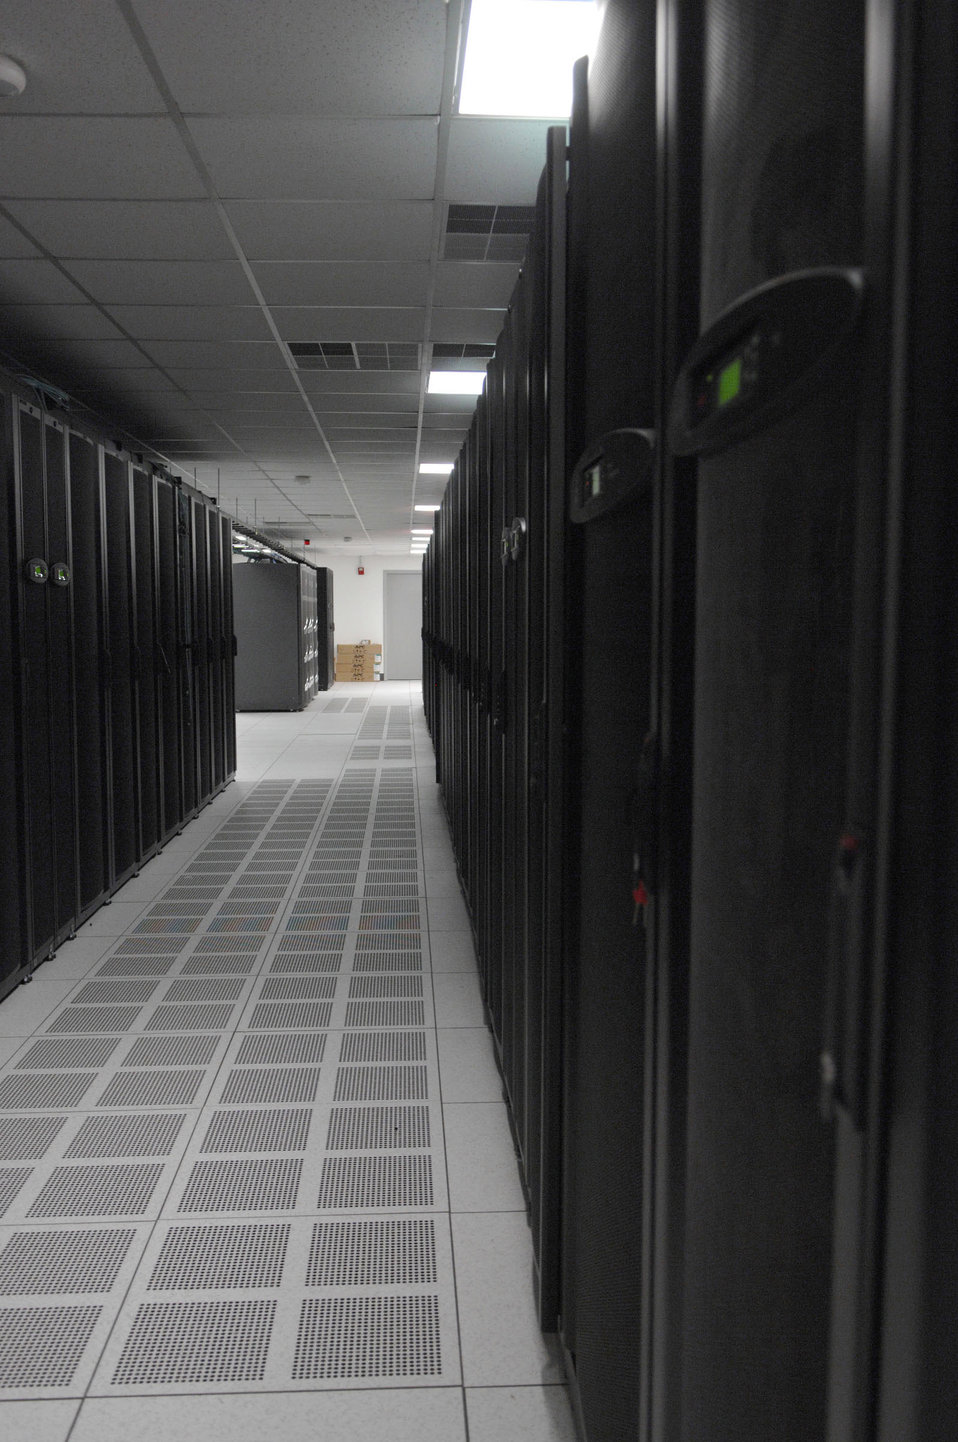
New Area Processing Center consolidates mail, file sharing

Computer racks inside the Andrews Area Processing Center at Andrews Air Force Base, Md., hold consolidated e-mail, Web, file sharing and other data for more than 160,000 Air Force members.